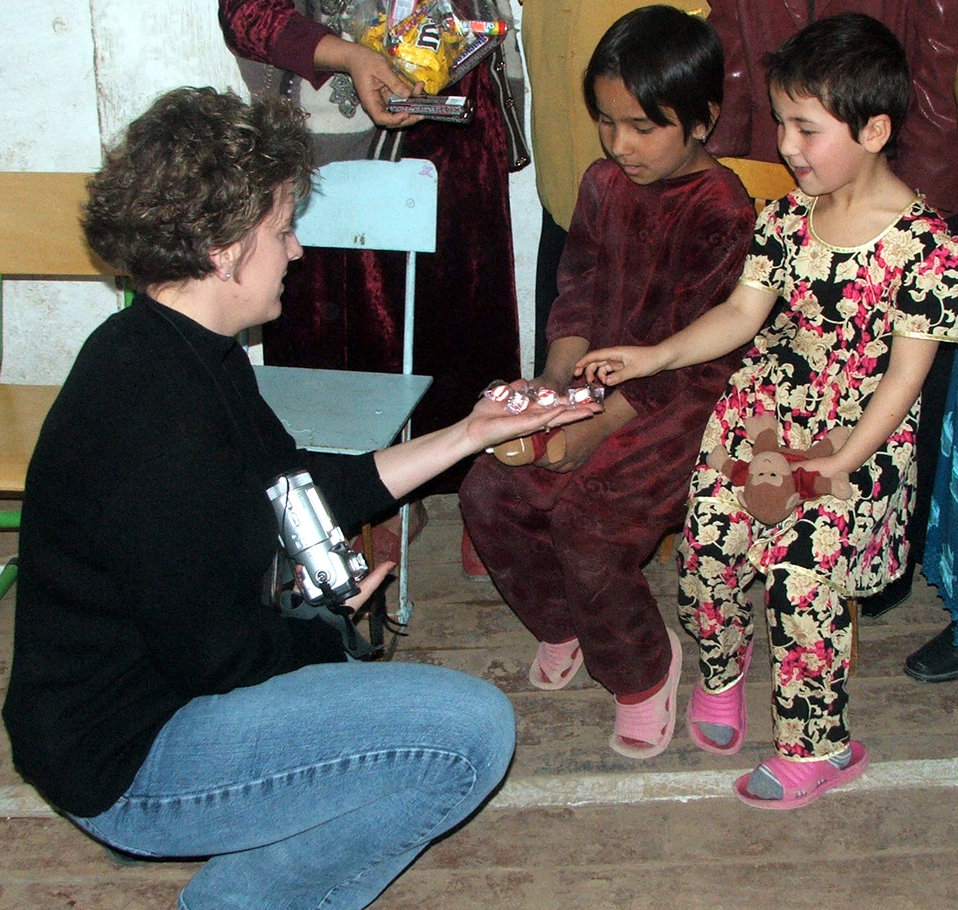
Airmen connect with Uzbeks through donations, volleyball

KHANABAD, Uzbekistan -- Master Sgt. Regina Rumpf hands candy to Uzbek children during a humanitarian aid visit here March 3. A group of Airmen and Soldiers from nearby Karshi-Khanabad Air Base visited the village medical clinic and the school where they played a volleyball game and handed out donations.